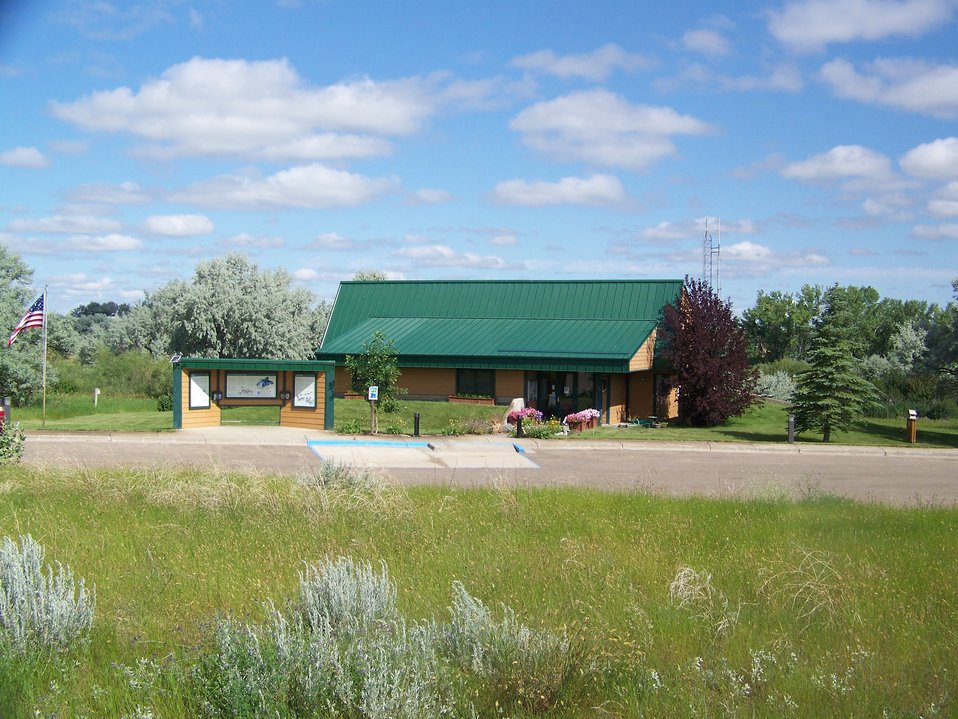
Bowdoin NWR Office